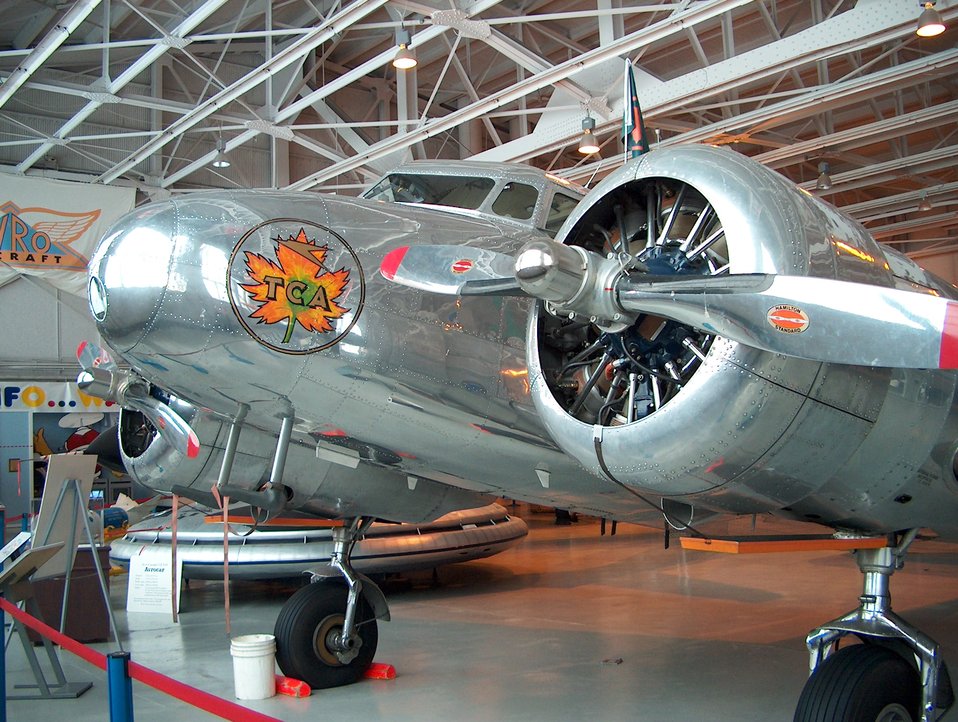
Lockheed Electra 10A 'CF-TCC' in Trans Canada Airlines livery at the Western Canada Aviation Museum.